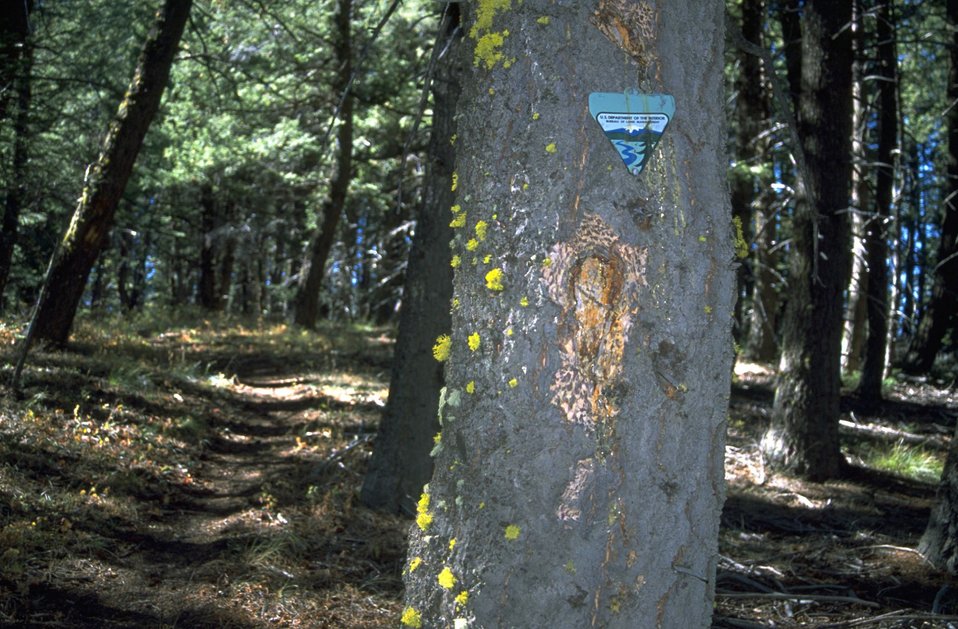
BLM logo on tree that has been blazed